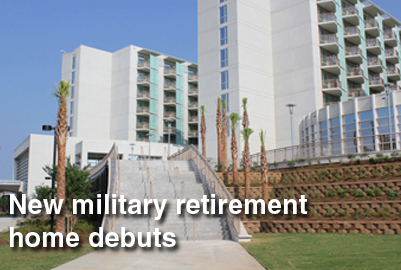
Armed Forces Retirement Home